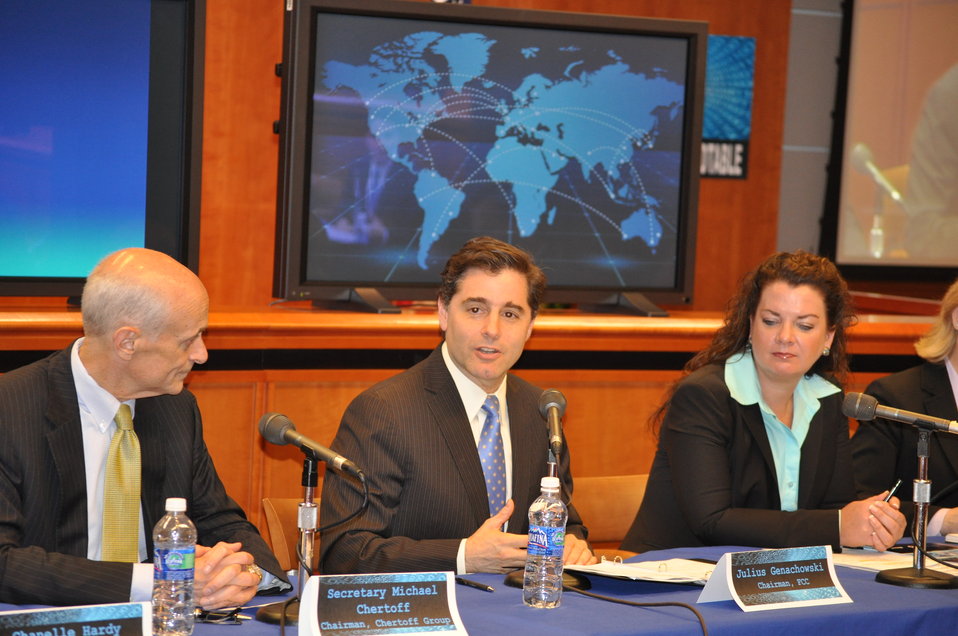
Cybersecurity 5-16

Cybersecurity for Small Business Roundtable; May 16, 2011